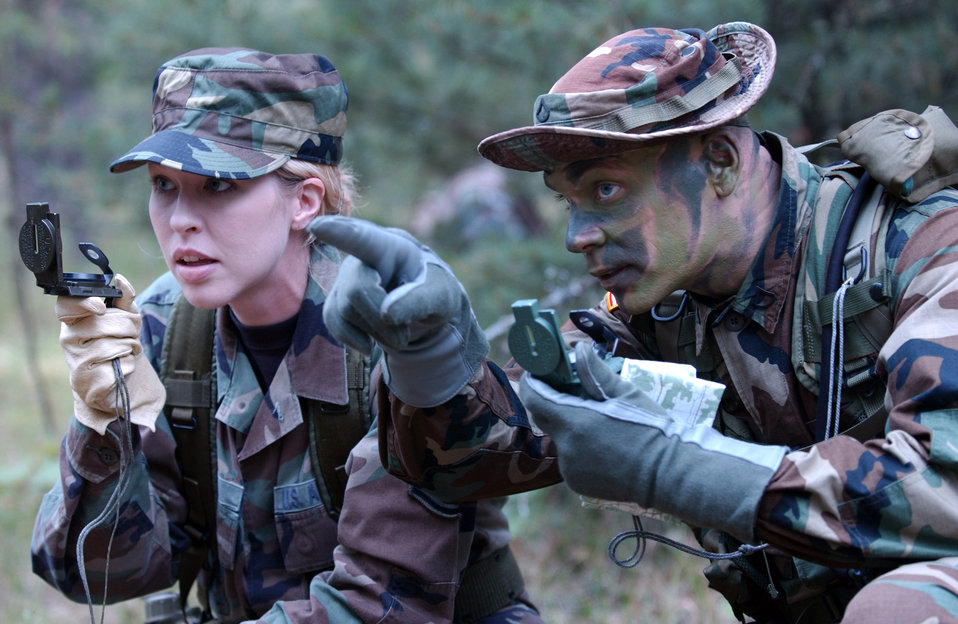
Learning to survive

Army Pfc. Dave Grever shows Tech. Sgt. Cindy Beaird how to shoot an azimuth during a combat search and air rescue operation at Fort McCoy, Wisc., July 21. The operation was part of Patriot 2006, a National Guard-sponsored joint exercise held to increase the warfighting capabilities.